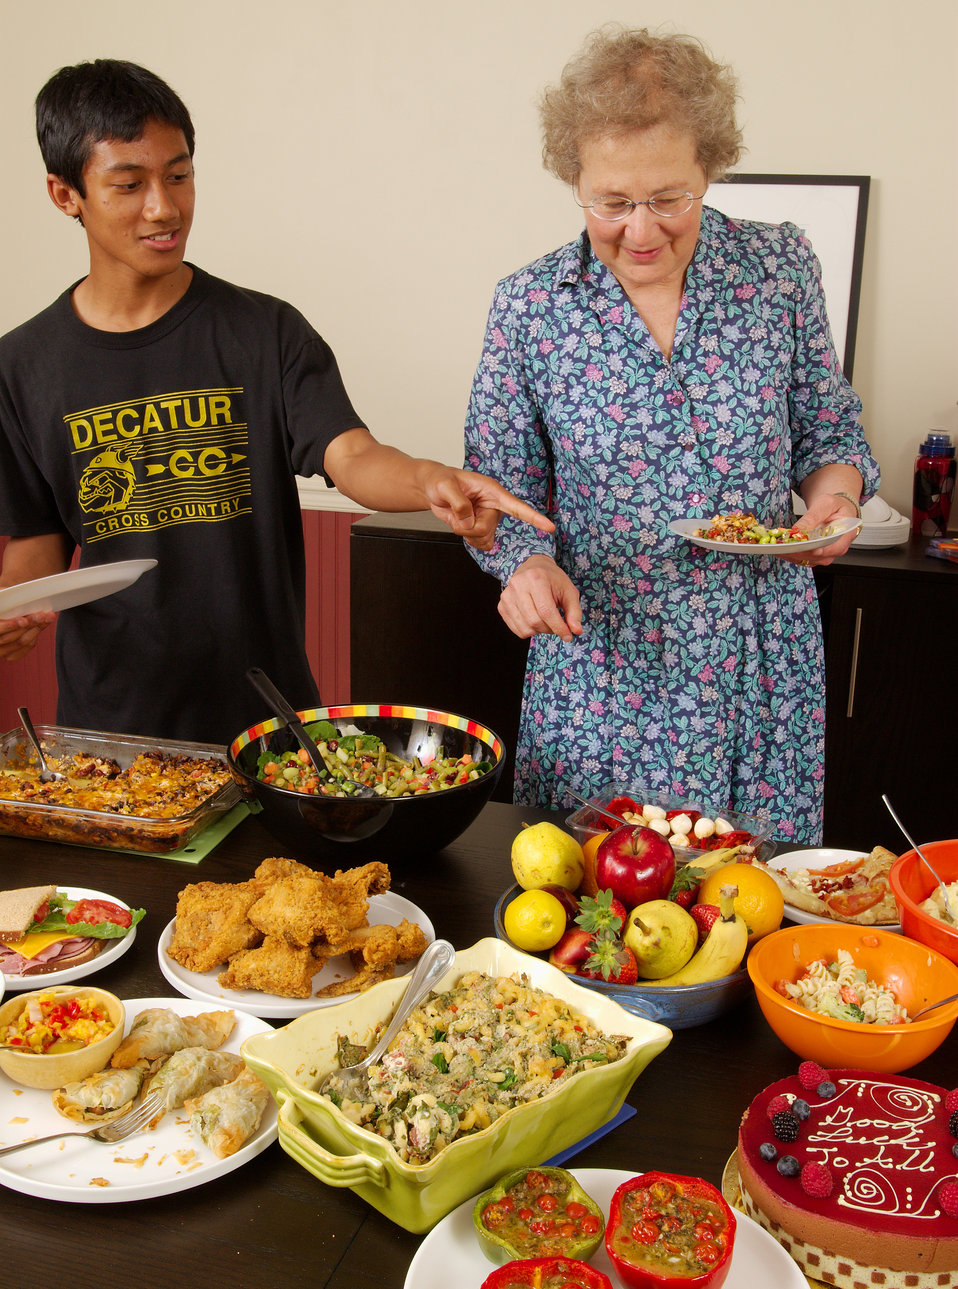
Here, a young man was pointing out to a middle-aged woman some of the healthier food choices available at this party, where many different foods were plated atop the dining table. All these foods were quite tasty, but some were more nutrient-dense than others, while others were more calorie-dense than the rest.